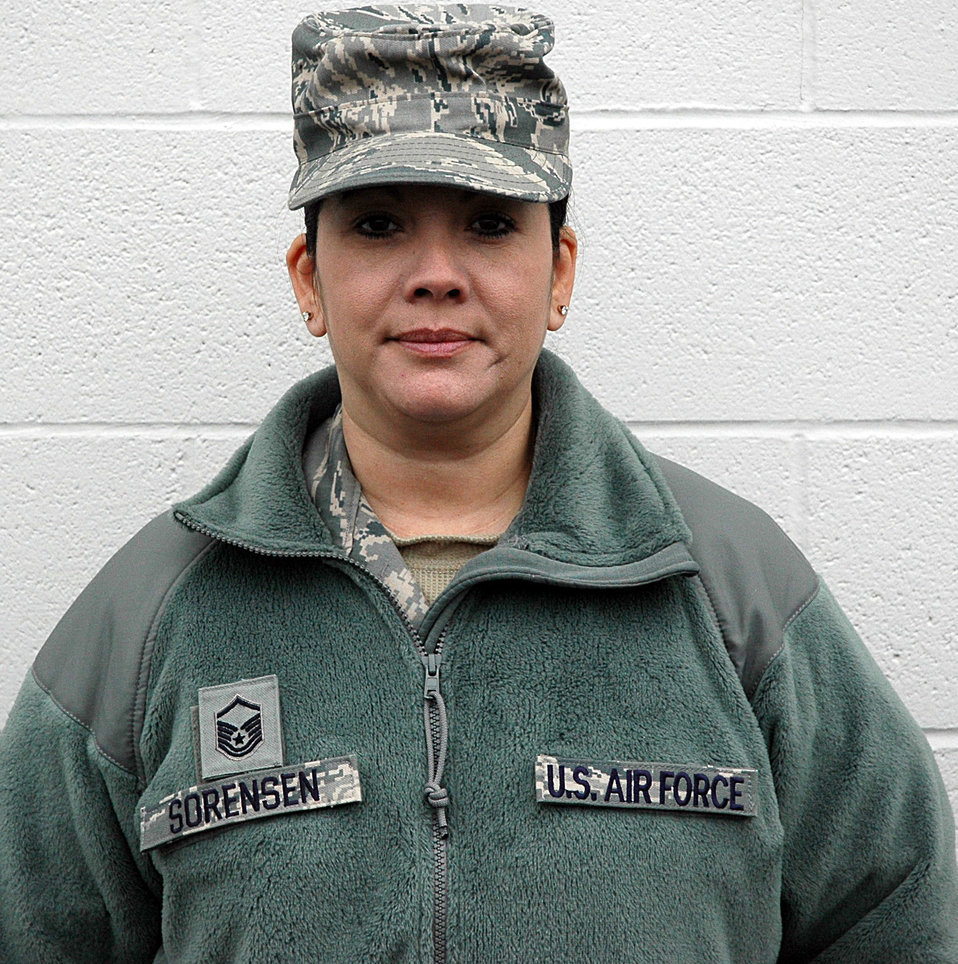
Guidelines for green fleece outer garment.

Air Force officials have issued new guidance on the proper wear of the sage-green fleece jacket.